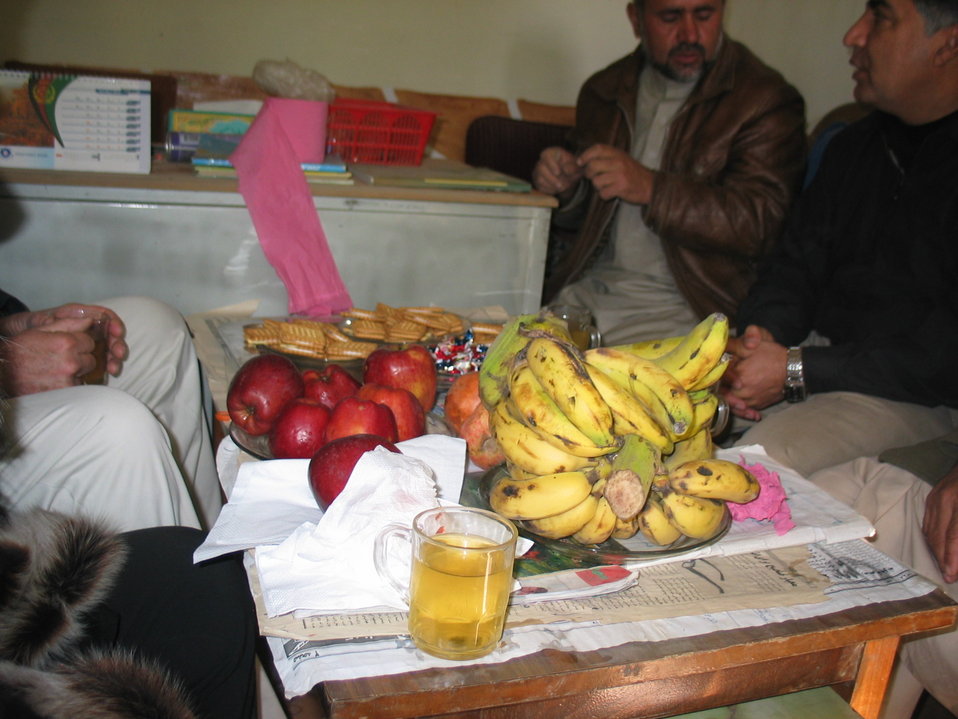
Kabul River Bridge Renovation, December 3, 2010